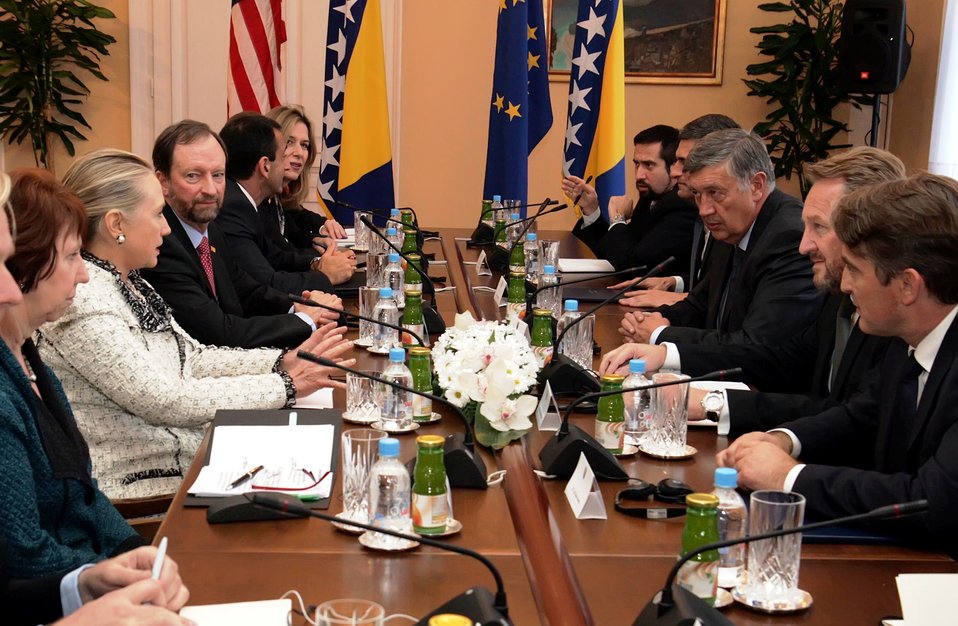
Secretary Clinton and EU High Representative Ashton Meet With Members of the Bosnian Presidency

U.S. Secretary of State Hillary Rodham Clinton and EU High Representative Catherine Ashton meet with members of the Bosnian Presidency in Sarajevo, Bosnia and Herzegovina, October 30, 2012.